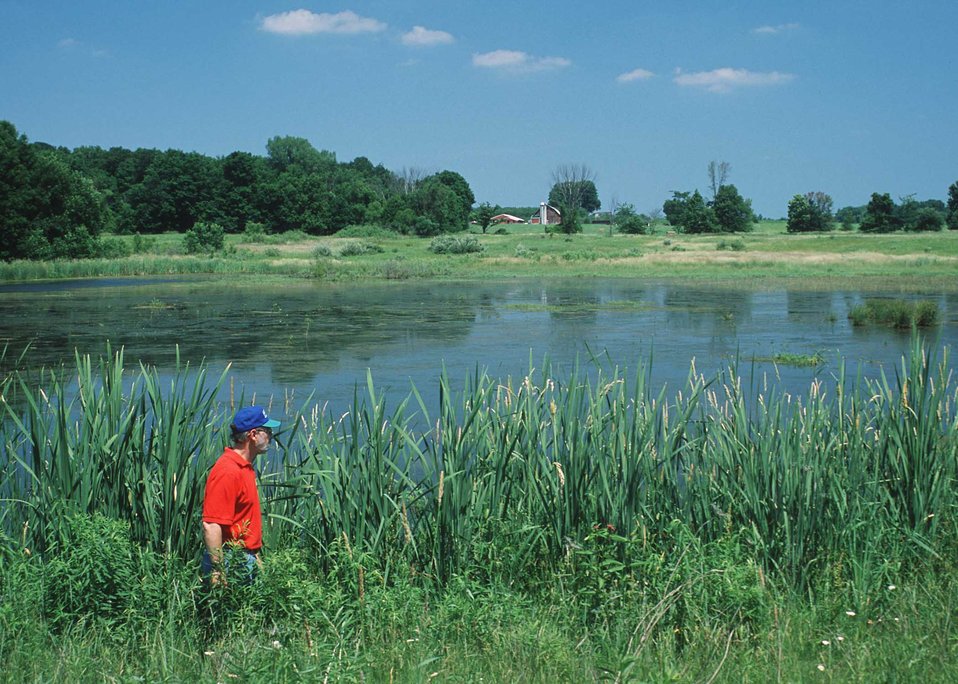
Soil Conservationist Gale Nobes standing near an open water wetland area. Newaygo County, Michigan.